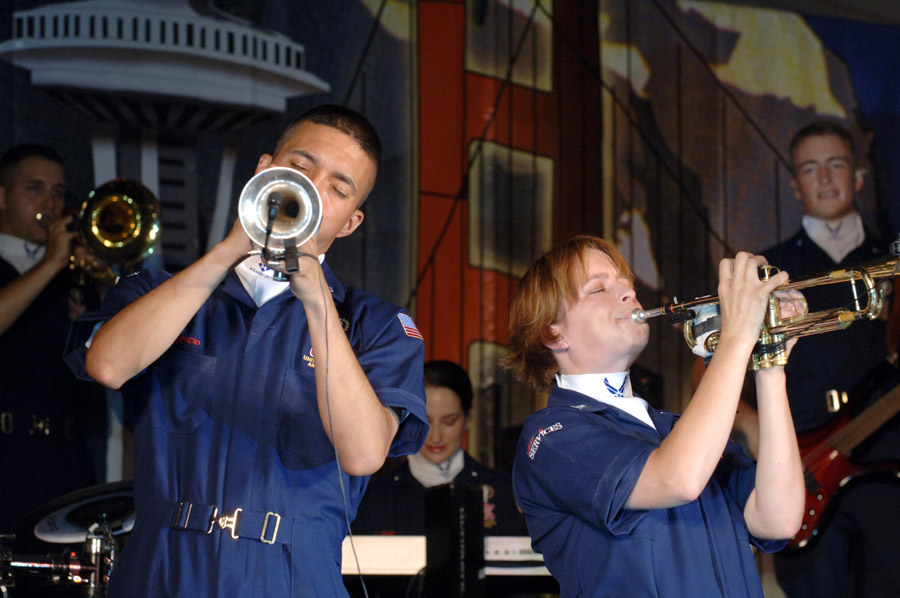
Tops In Blue needs horn players

The Tops In Blue entertainment team is looking for horn players for the upcoming 2007 tour. Horn players on active duty in the Air Force can audition directly with Tops In Blue officials.